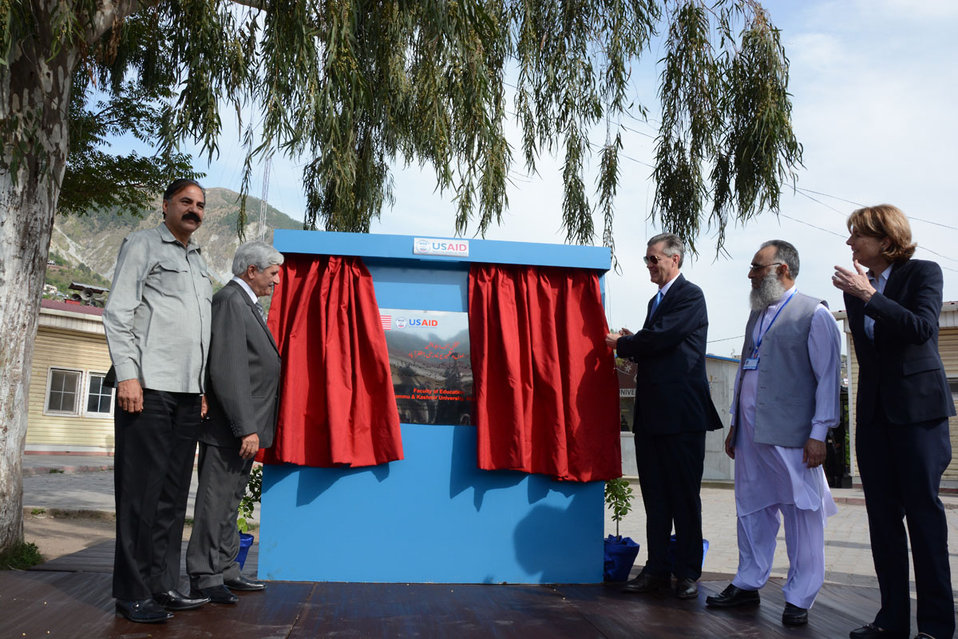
The United States Ambassador to Pakistan, Richard Olson broke ground for a U.S. funded construction of a new Faculty of Education building in Muzaffarabad, AJK. 35